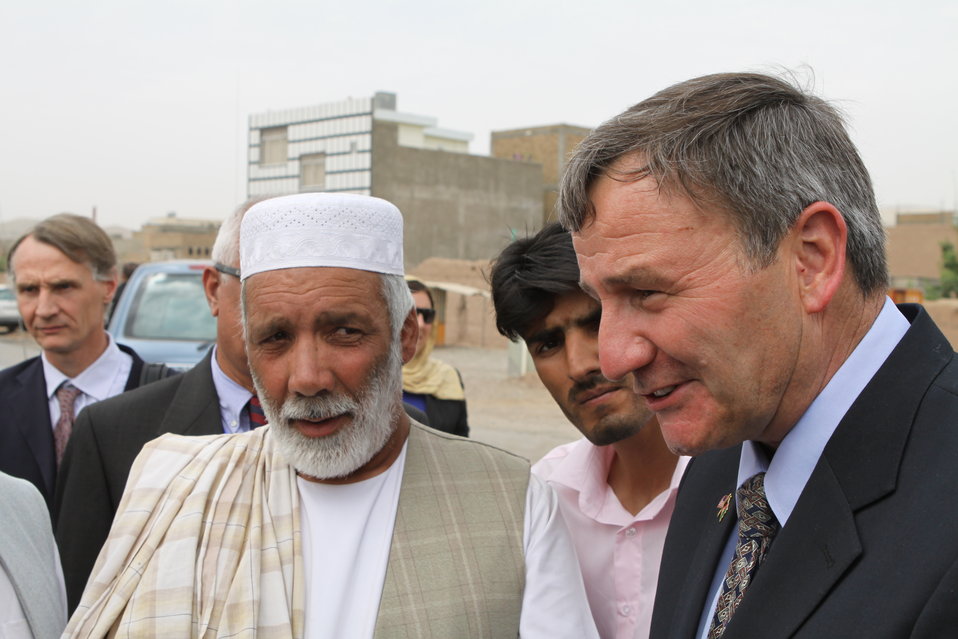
100525 Hirat Marble Conference 645